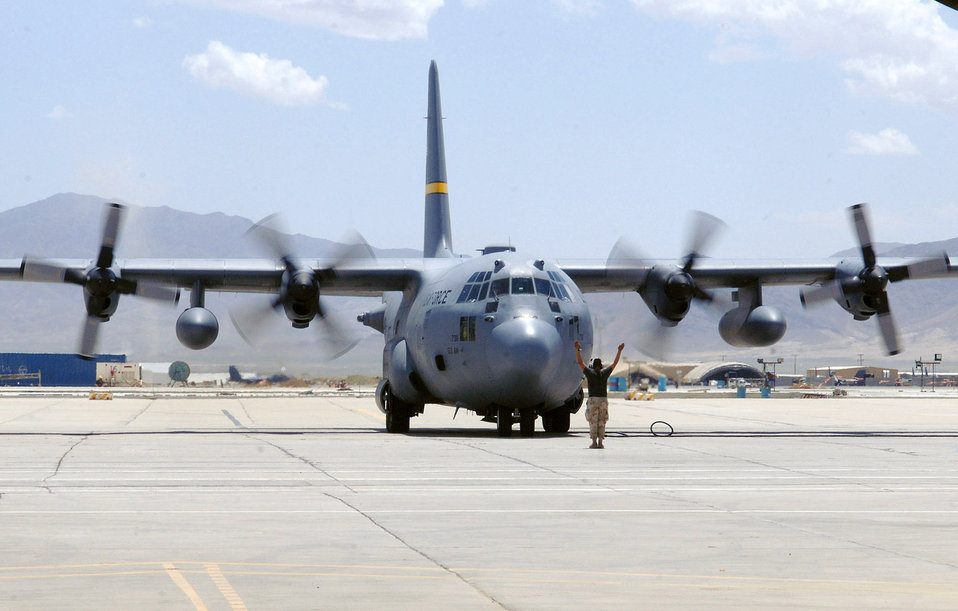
Sept. 8 airpower summary: C-130s deliver cargo, warfighters

A C-130 Hercules crew chief from the 455th Expeditionary Maintenance Group marshals a C-130 onto its parking spot on the flightline at Bagram Air Base, Afghanistan. Coalition C-130s as well as C-17 Globemaster IIIs flew 130 sorties delivering approximately 580 tons of cargo and nearly 3,000 passengers around Southwest Asia Sept. 8.